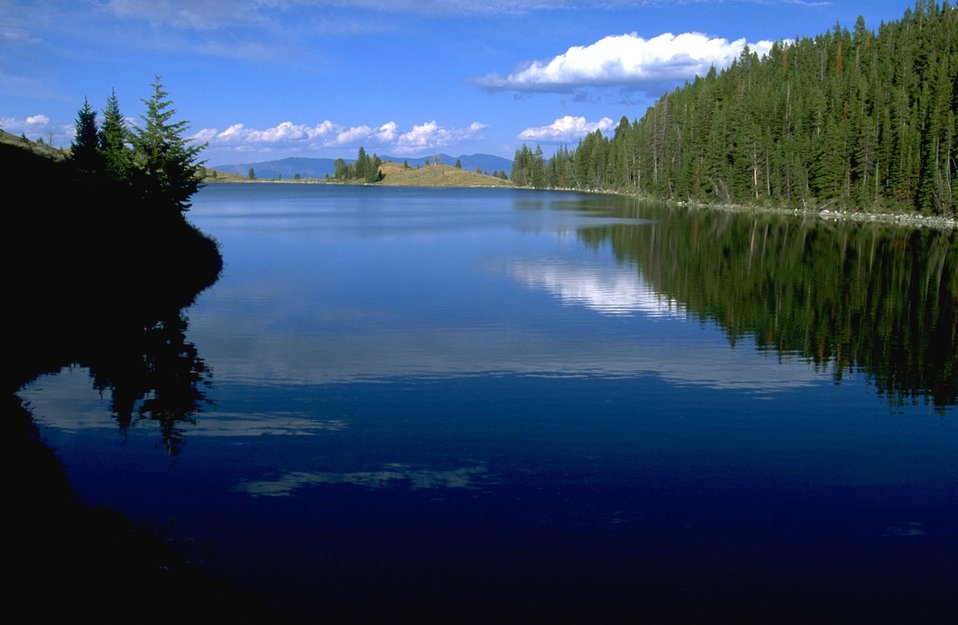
Clouds reflecting in Axolotl Lake